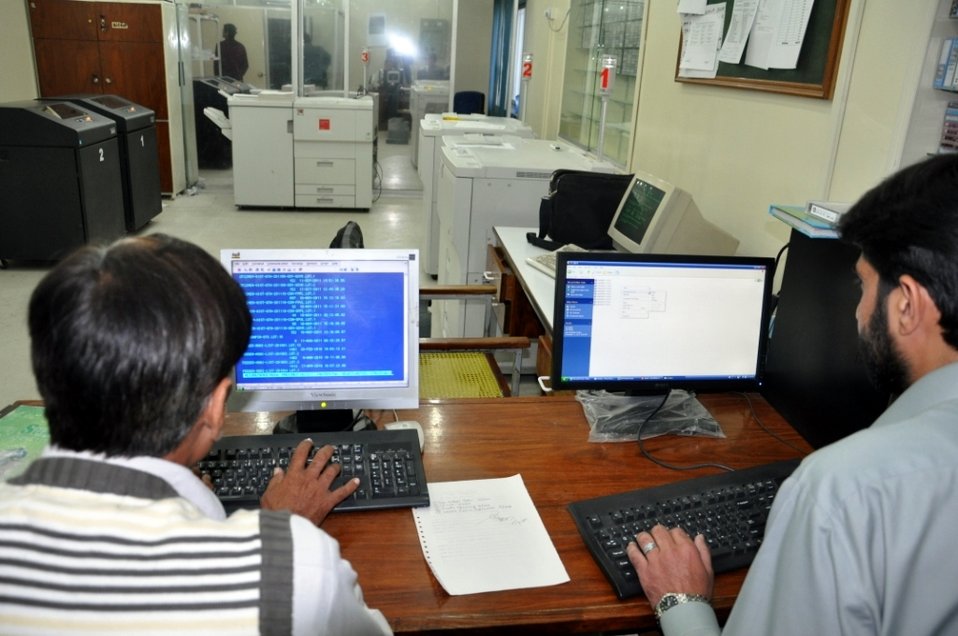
17 Nov - QESCO visit

USAID Power Distribution Program Communication’s & IT team visited QESCO head office in order to explore the possibility to revamp the communications department and IT infrastructure. To its credit QESCO for IT infrastructure and PRO office revamp were gathered from respective offices. head office was neat and clean with basic infrastructure and very responsive and cooperative staff. Requirement specification